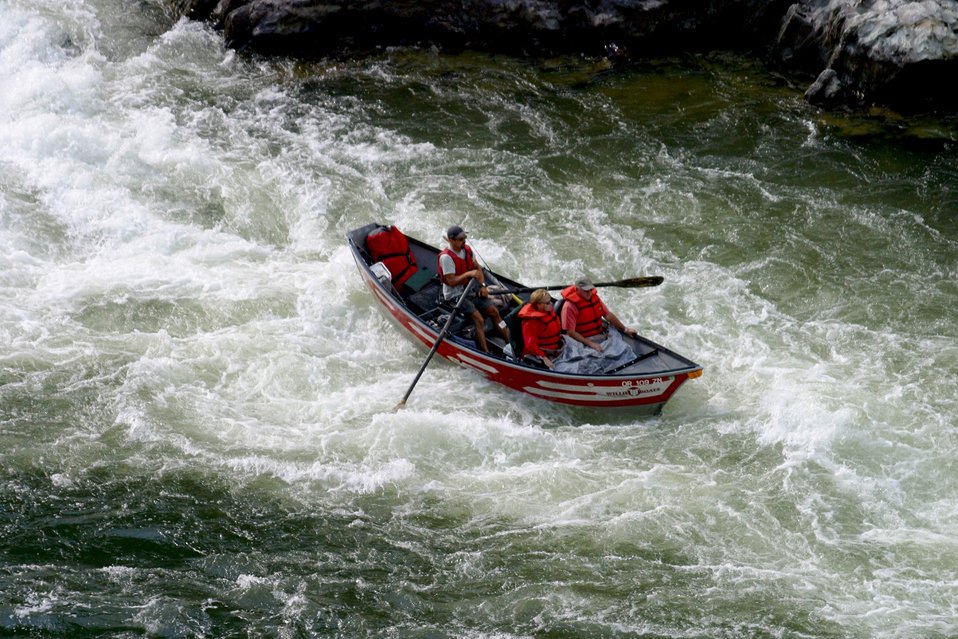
Grave Creek Falls